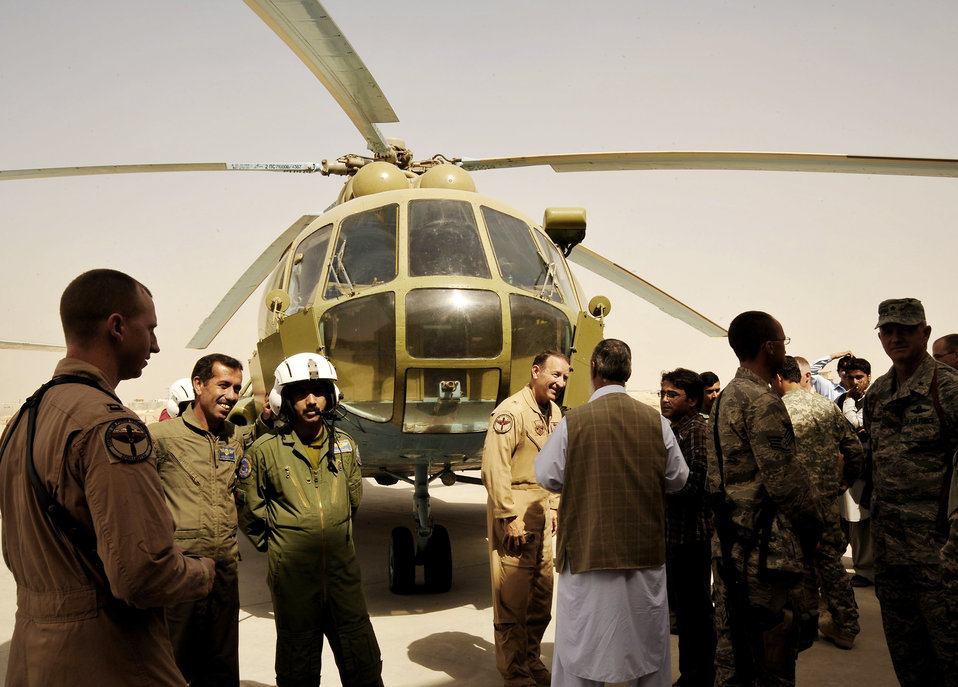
Wing Stand-Up for Afghans

Afghan and coalition servicemembers and local dignitaries celebrate the activation of the Afghanistan National Army Air Corps' second wing Oct. 5, 2009, at Kandahar Airfield, Afghanistan. The primary mission of the new wing is to move troops and supplies around the region and support smaller Afghan military detachments.